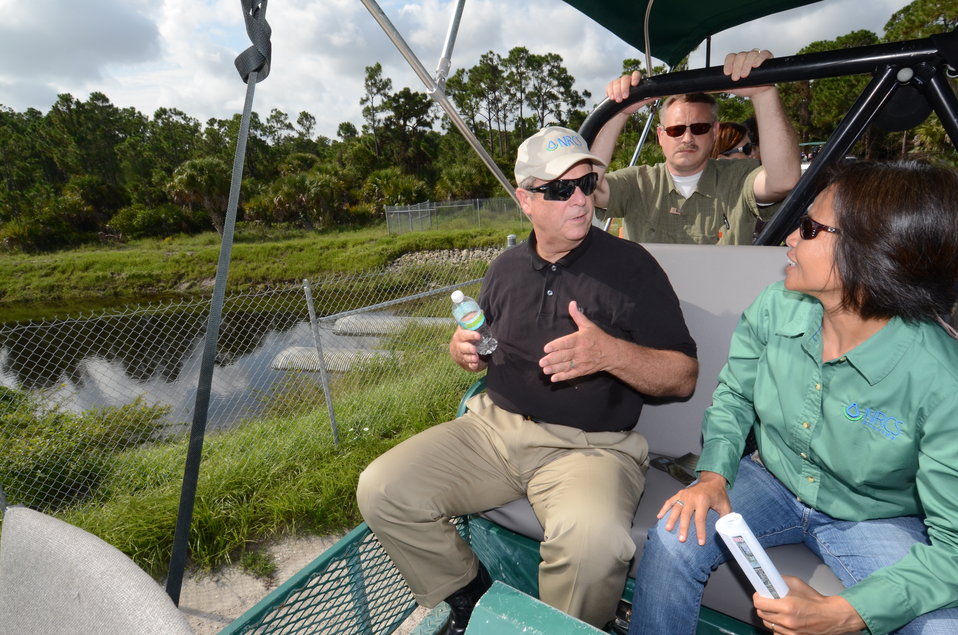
Agriculture Secretary Tom Vilsack rides along with USDA, National Resources Conservation Service Nga Watts while touring the Winding Waters Natural Area, FL, on Thursday, August 8, 2011.